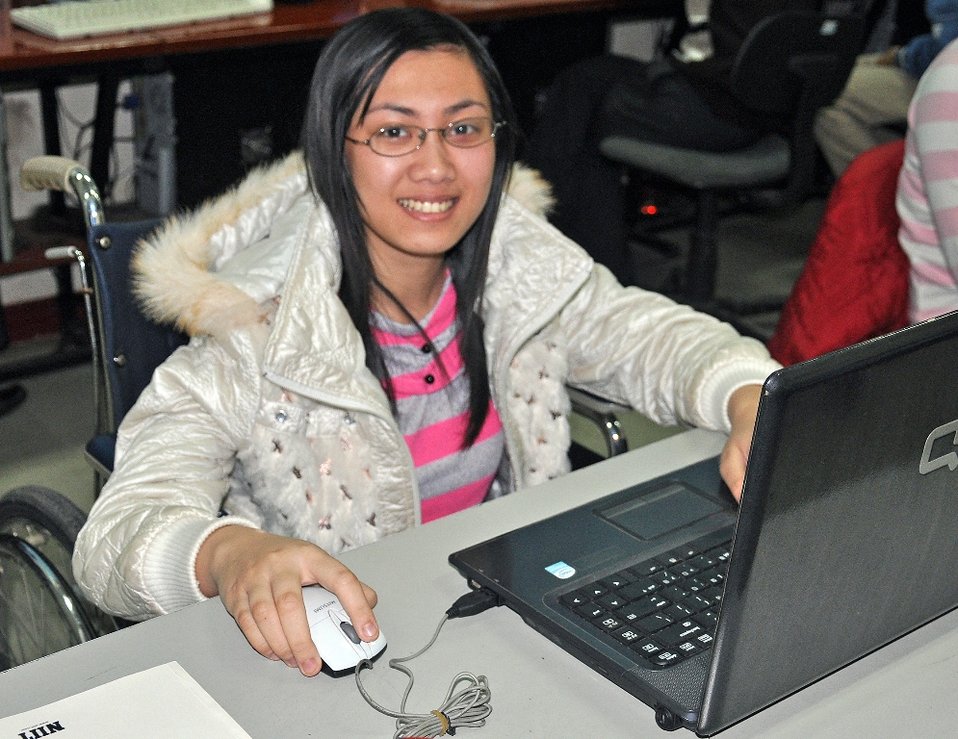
USAID assists persons with disabilities in Vietnam

Nguyen Thi Hien is one of many Vietnamese students with disabilities to learn skills through a USAID-funded project.